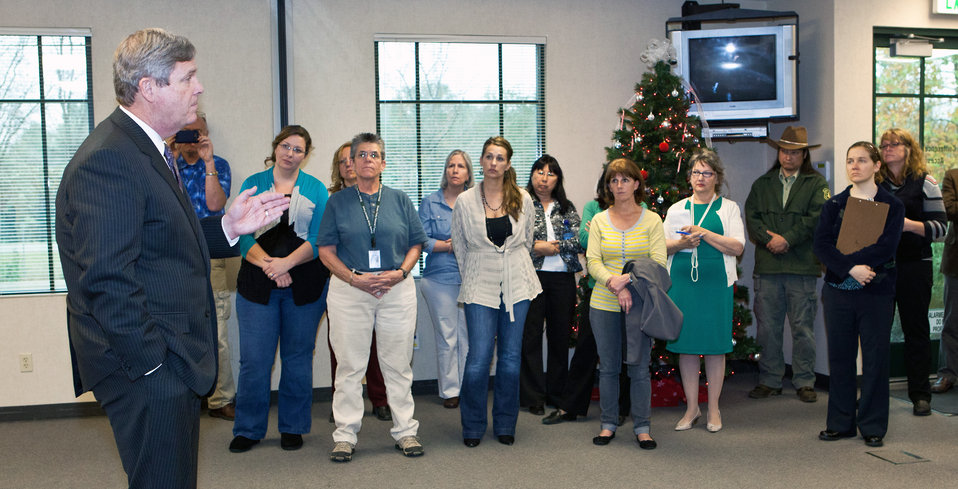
Agriculture Secretary Tom Vilsack speaks with U.S. Department of Agriculture (USDA) employees at the Shasta-Trinity National Forest headquarters in Redding, CA on Dec. 10, 2012.